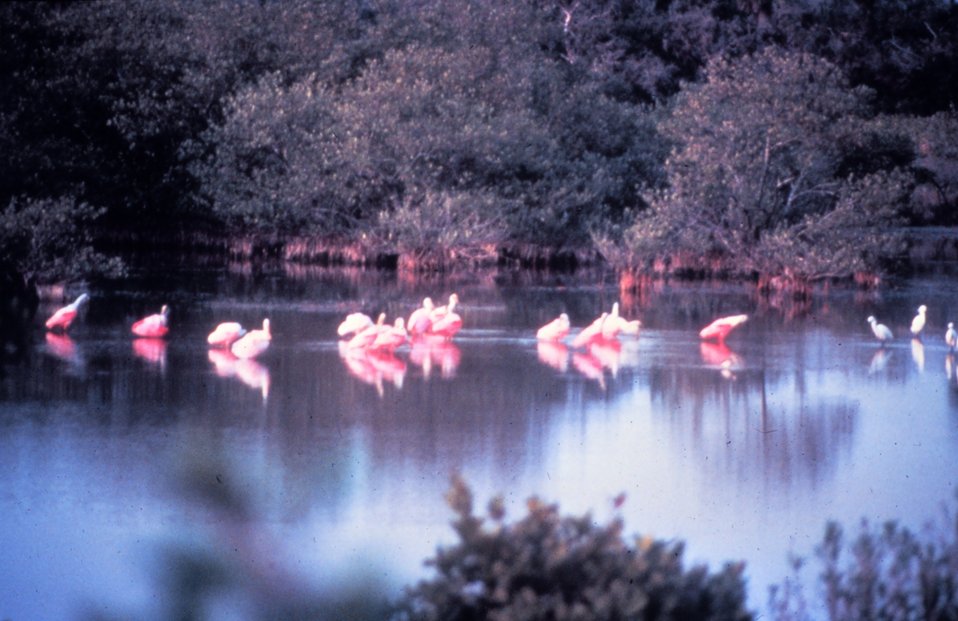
Roseate spoonbills - Ajaia Ajaja - can be seen feeding in the salt marsh areas of Canaveral National Seashore during the spring and fall. The Roseate spoonbill is Florida's only native pink bird, the flamingo is not native and if found in the wild is usually an escapee from local attractions.